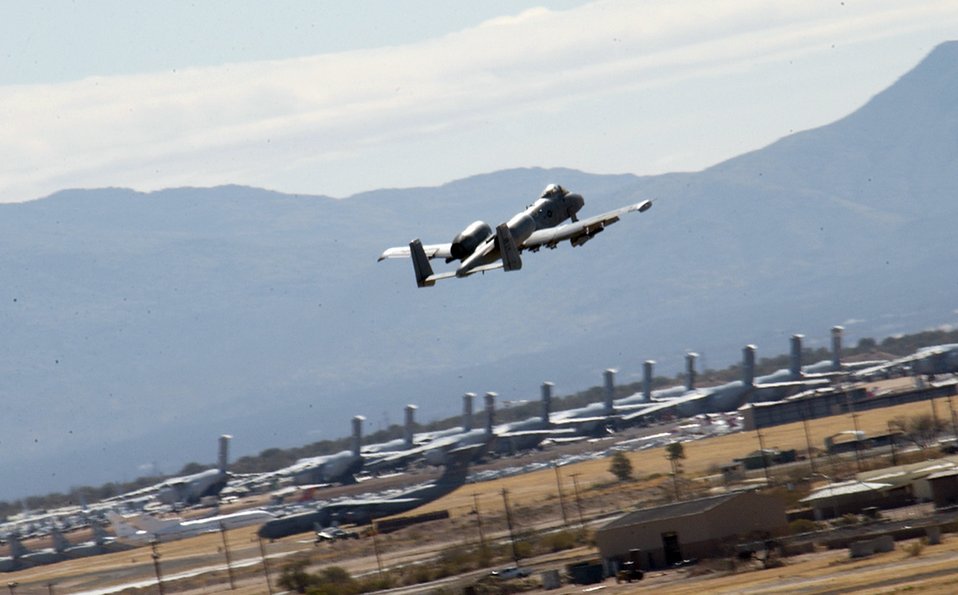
Exercise Bushwacker 06-02

An A-10 Thunderbolt II from the 354th Fighter Squadron flies in support of Exercise Bushwacker 06-02 at Davis-Monthan Air Force Base, Ariz., on Saturday, April 1, 2006. The operational readiness exercise helps ensure Airmen are ready to deploy.